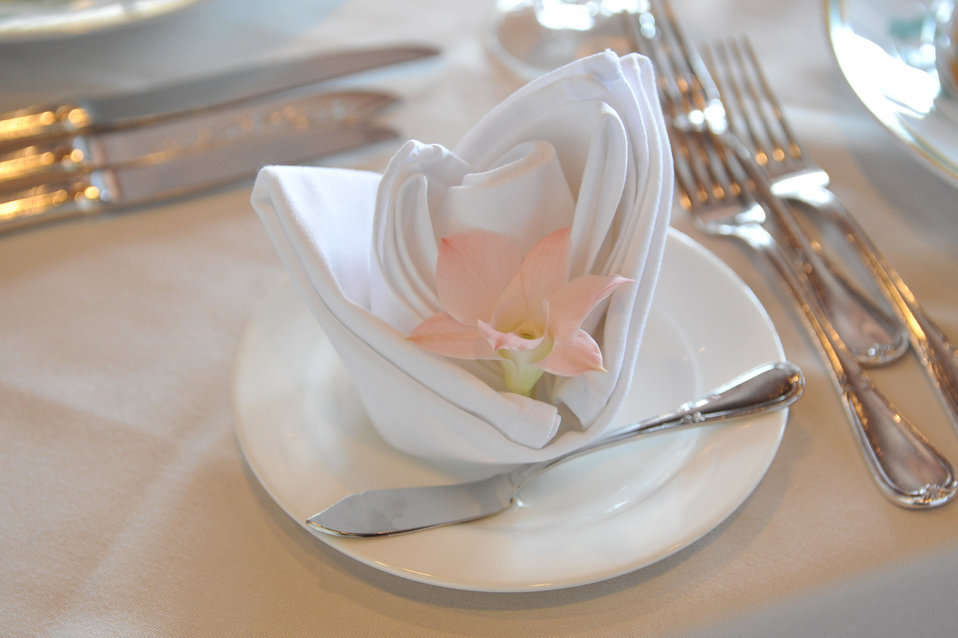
Table of the wedding 2

Table of the wedding.